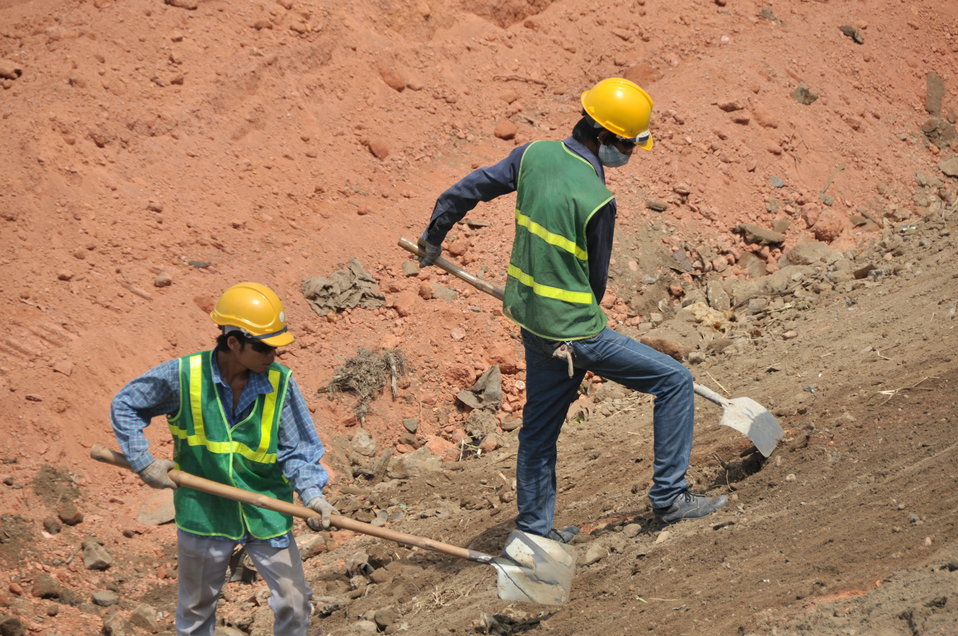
Site construction at the Environmental Remediation of Dioxin Contamination at Danang Airport

Progress at the Danang Airport remediation site
April 23, 2013